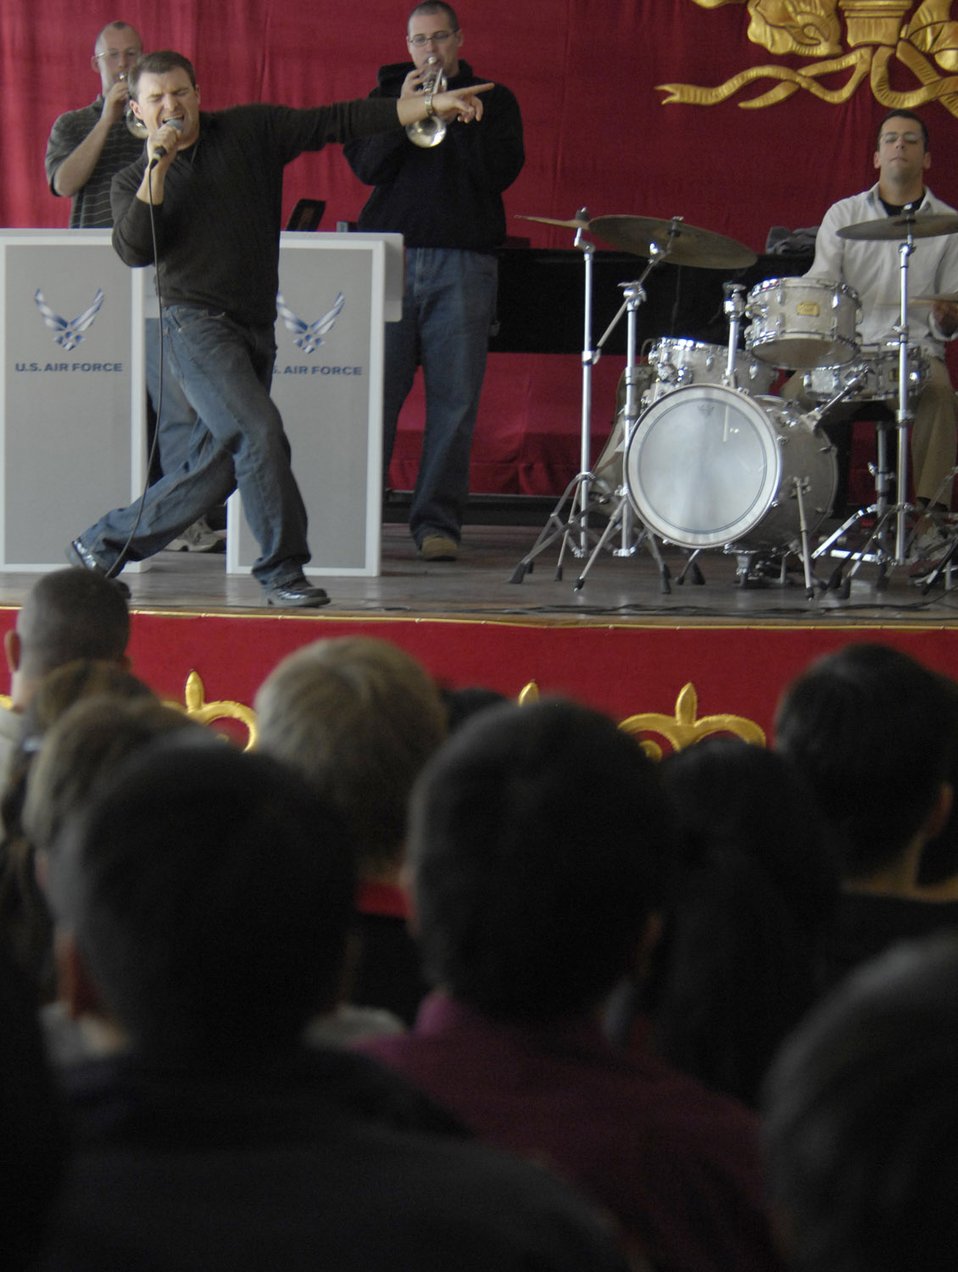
Band members connect with Kyrgyzstan music students

Staff Sgt. Jamie Gilley performs March 26 for students of the Bishkek College of Music in Kyrgyzstan. The Air Force band performed for Manas Air Base Airmen and local villages and schools during their six-day trip to Kyrgyzstan. Sergeant Gilley is a volocalist of the U.S. Air Forces Central Band Hot Brass.